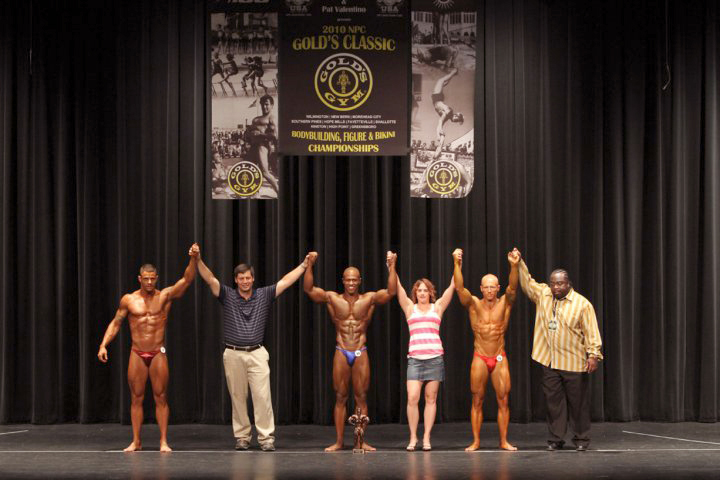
Airman captures bodybuilding medals

Staff Sgt. Franklin Walton stands center stage with fellow winners and hosts of a regional bodybuilding competition July 8, 2010, in N.C. Sergeant Walton is a 4th Security Forces Squadron military working dog handler. He earned first place in the competition's overall and middle-weight categories.